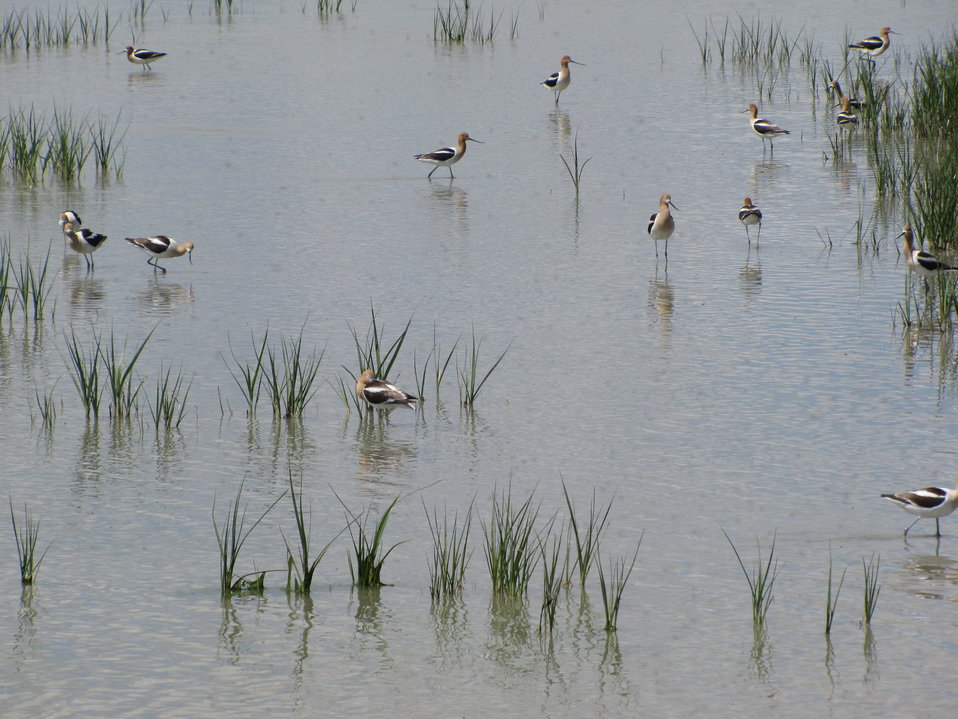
Migratory Shorebirds Benefit from PFW

Migratory shorebirds, such as the American Avocet, benefit from PFW wetland restoration projects throughout Utah.